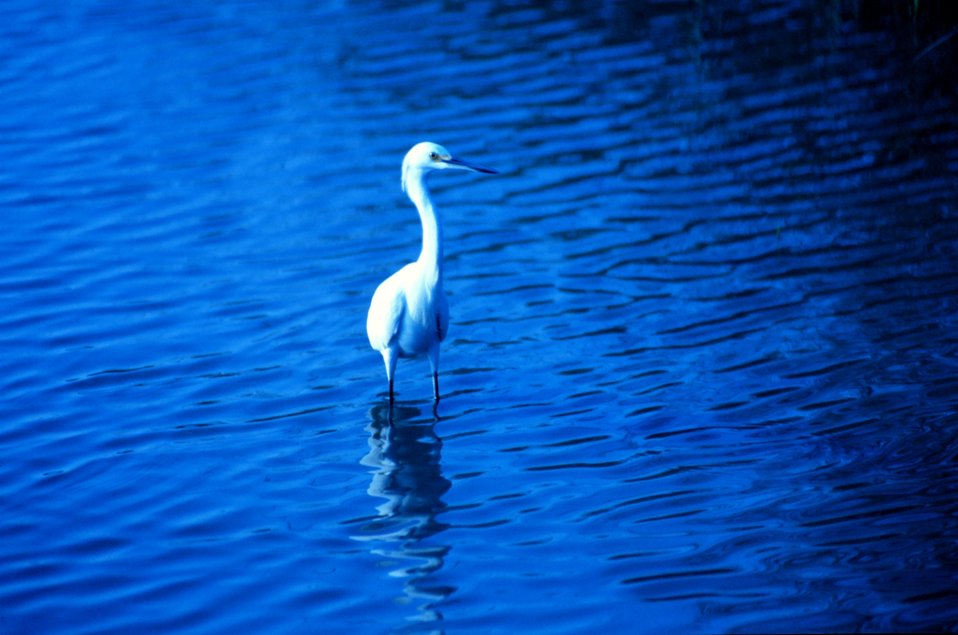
A great white egret in the tidal waters of Charleston harbor.